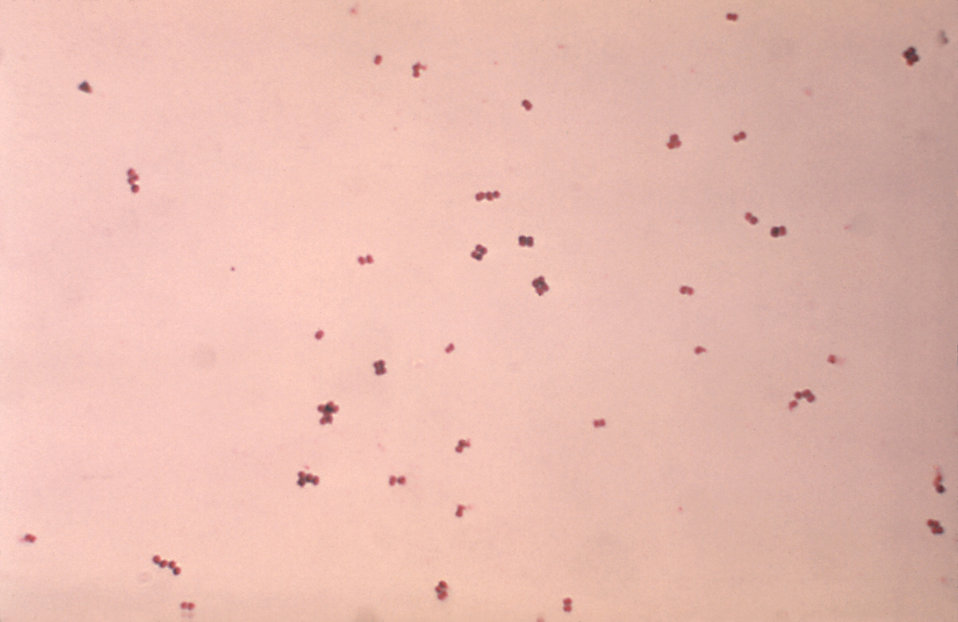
This photomicrograph depicts Gram-stained Peptococcus niger grown on a LD broth culture.